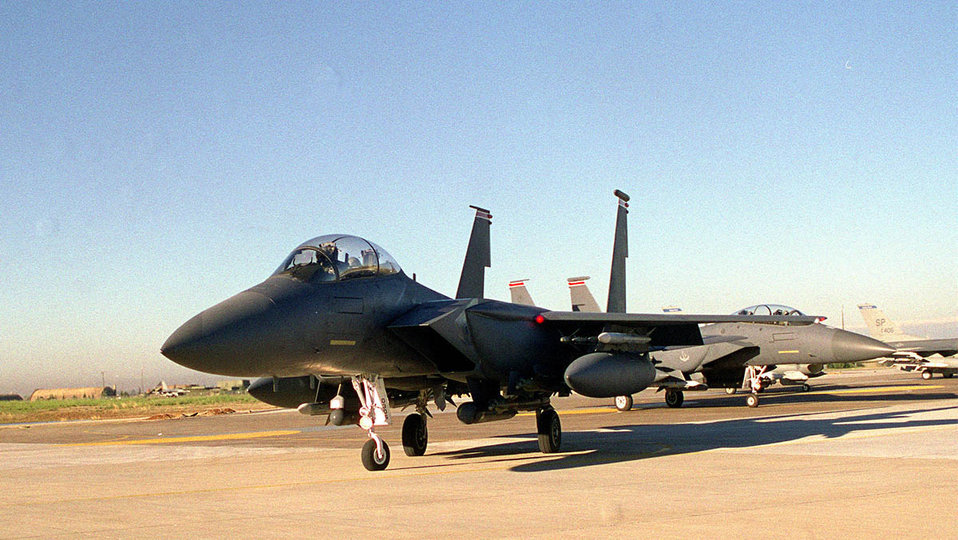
F-15E mission start

An F-15E Strike Eagle from 48th Expeditionary Fighter Squadron departs on a mission to enforce the northern no-fly zones over Northern Iraq. Strike Eagles fly radar suppression and radar-jamming mission over the northern no-fly zones. Two F-15E's fired four laser-guided bombs destroying Iraqi surface-to-air missile sites.